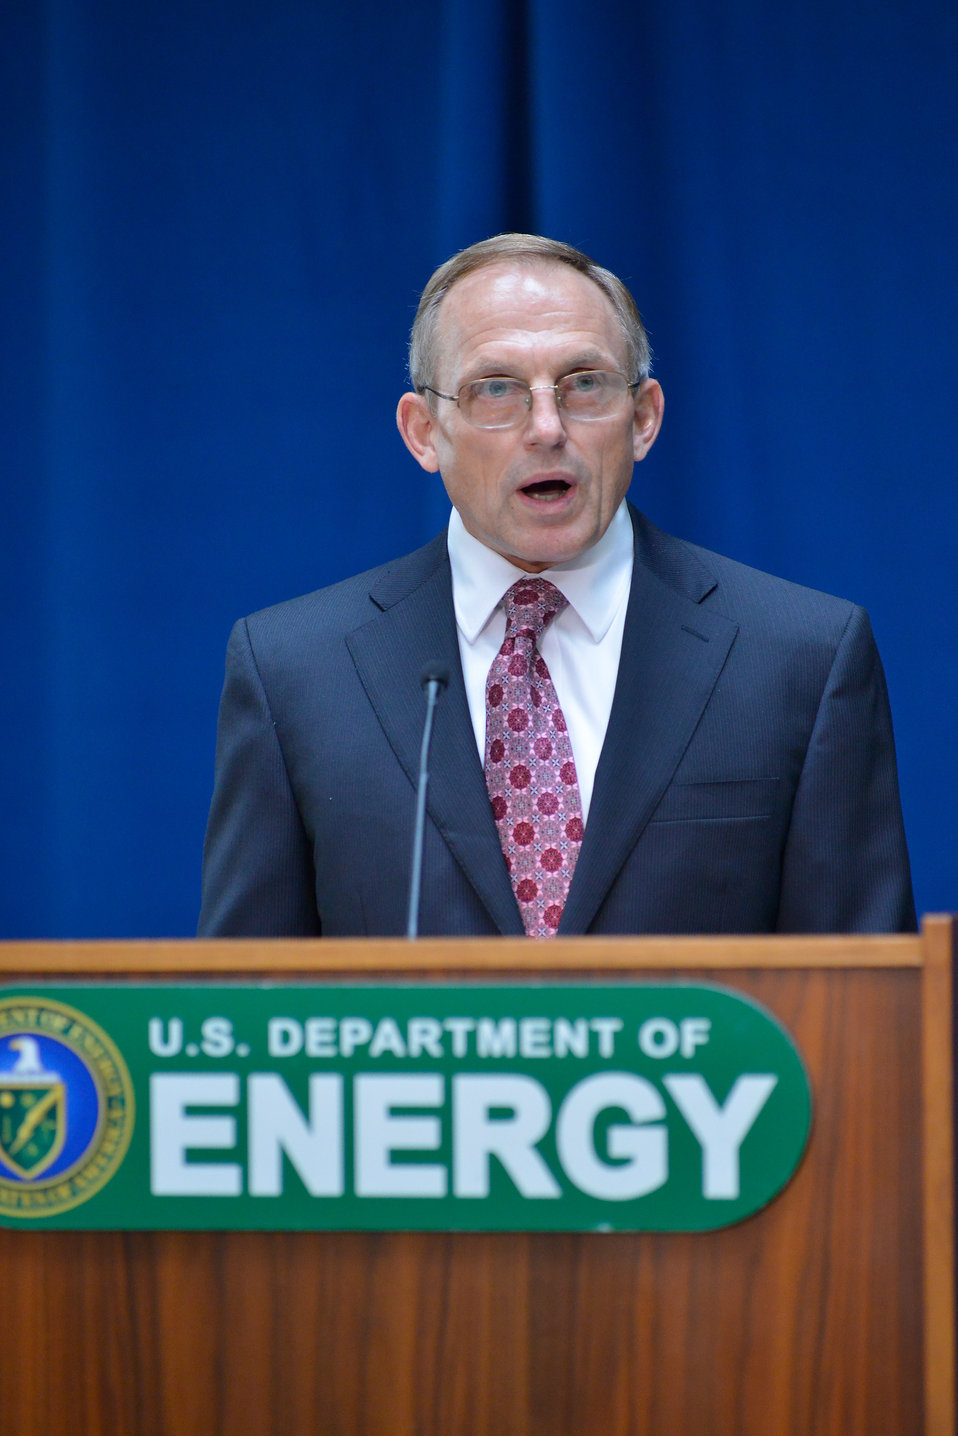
Ken Venuto

Mr. Kenneth Venuto, Director of the Human Capital Management Office of the Office of the Chief Human Capital Officer, acted as the Master of Ceremonies for the program on October 4.